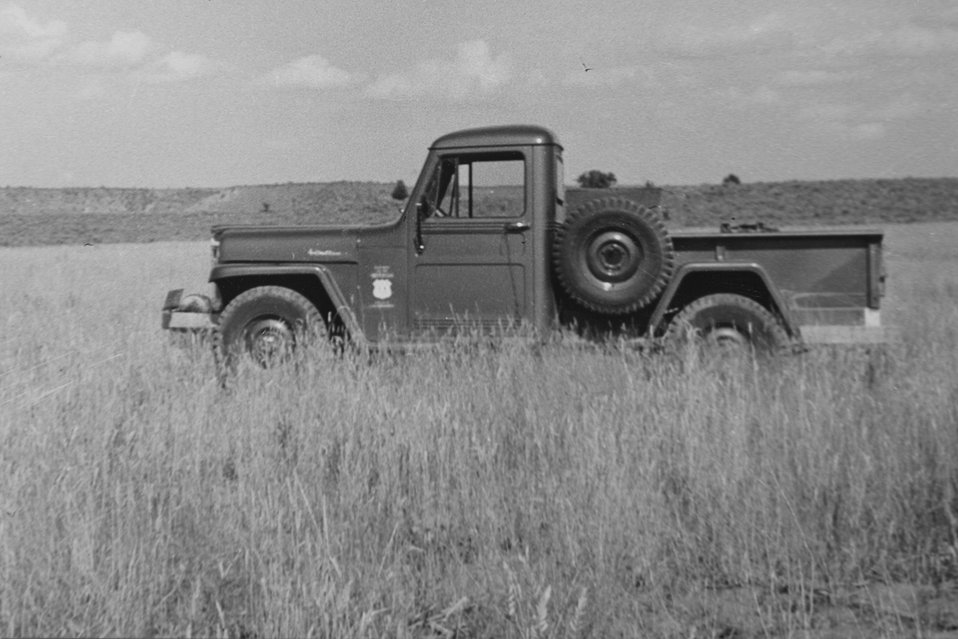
Checking growth of new seeding at Otley #2 Reseeding, south of Diamon, Oregon. Oct. 1956